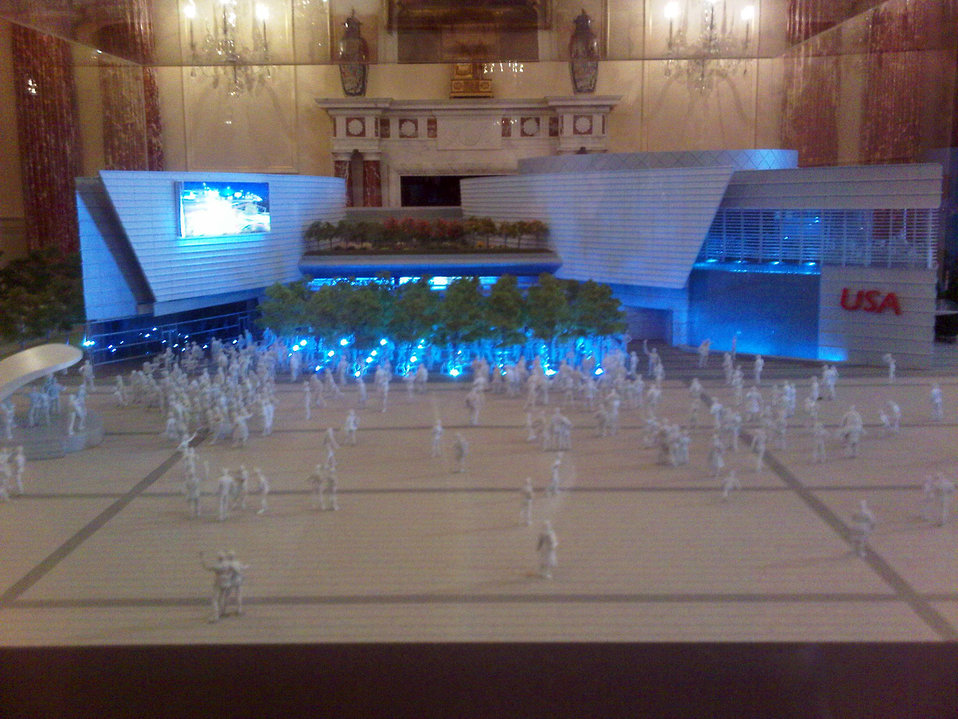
Secretary Clinton Celebrates Opening of Shanghai Expo U.S.A. Pavilion

A model U.S.A. Pavilion at the 2010 Shanghai Expo is displayed while U.S. Secretary of State Hillary Rodham Clinton celebrates the opening of the U.S.A. Pavilion at the 2010 Shanghai Expo via a digital video conference at a reception hosted by the Office for Global Partnership Initiatives at the Department of State in Washington, DC April 30, 2010.